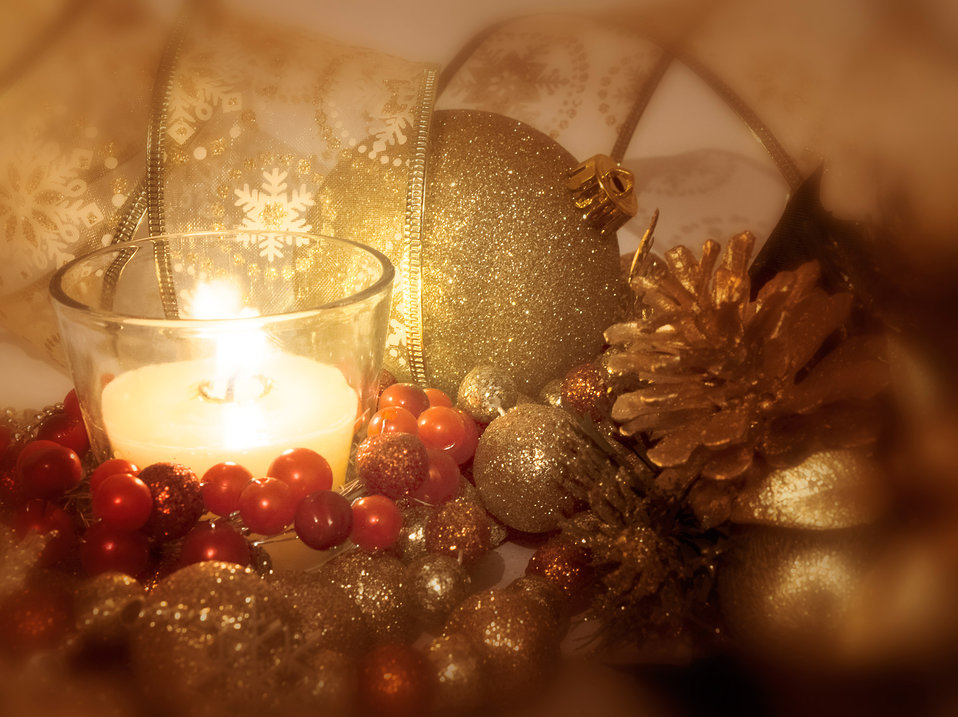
Christmas background

Background for christmas card.